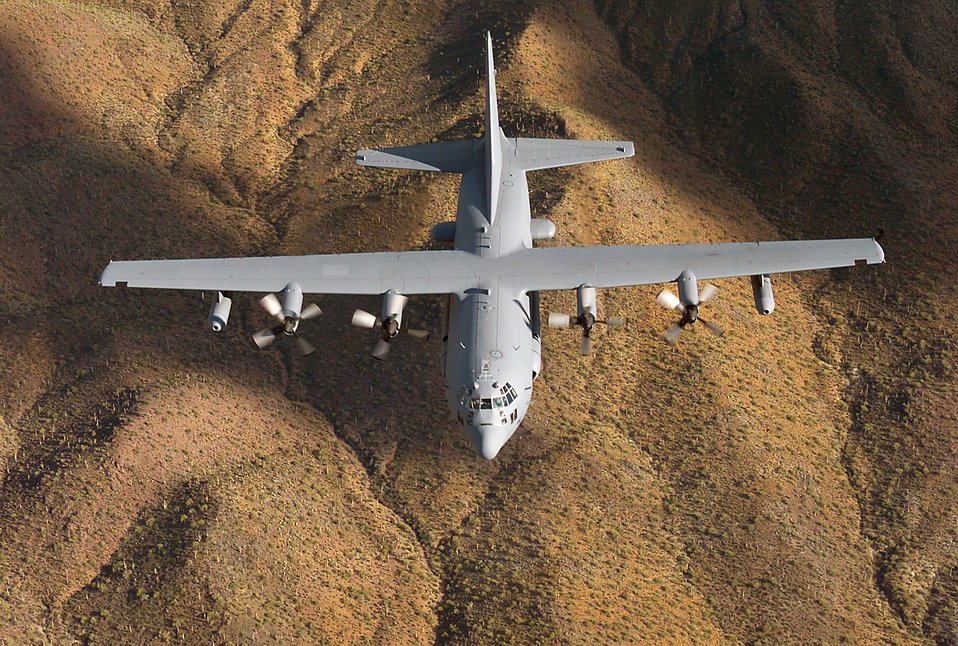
EC-130H Compass Call

An EC-130H Compass Call flies a training mission over Lake Mead, Ariz. Compass Call is the designation for a modified version of the C-130 Hercules aircraft configured to perform tactical command, control and communications countermeasures. Specifically, the modified aircraft uses noise jamming to prevent communication or degrade the transfer of information essential to command and control of weapon systems and other resources. Modifications to the aircraft include an electronic countermeasures system, air refueling capability and associated navigation and communications systems.